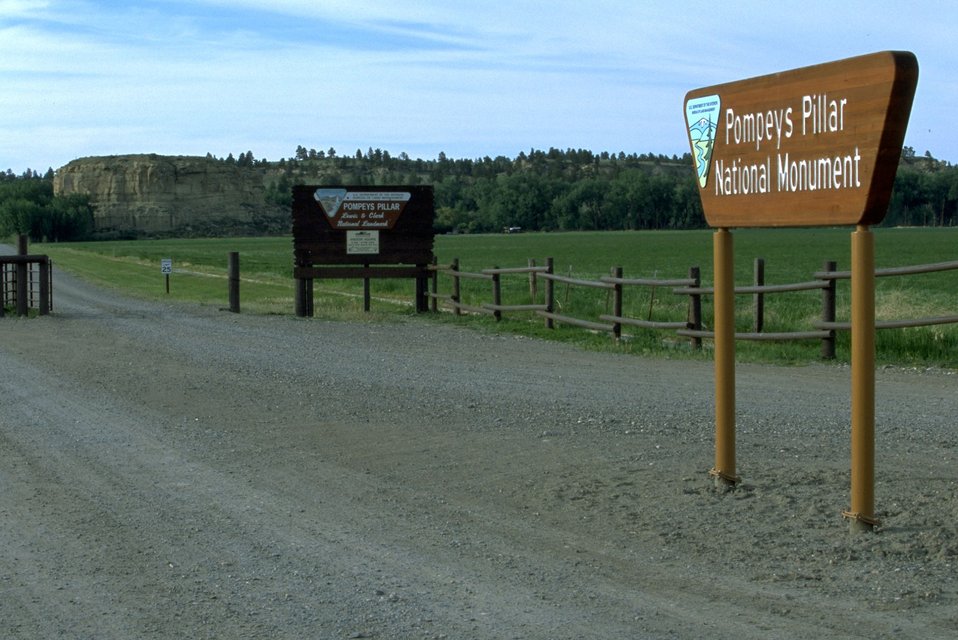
Entrance signs and road to Pompeys Pillar National Monument